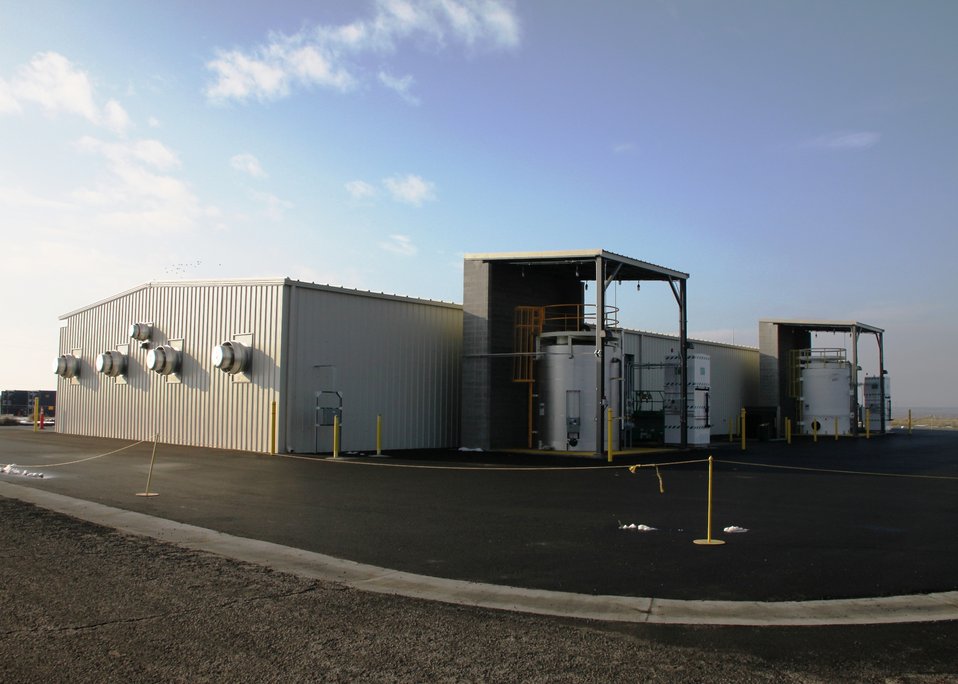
Richland Story -100 DX Groundwater Treatment Facility

The Recovery Act funded the construction of the 100-DX Groundwater Treatment Facility, which began operating in January 2011.